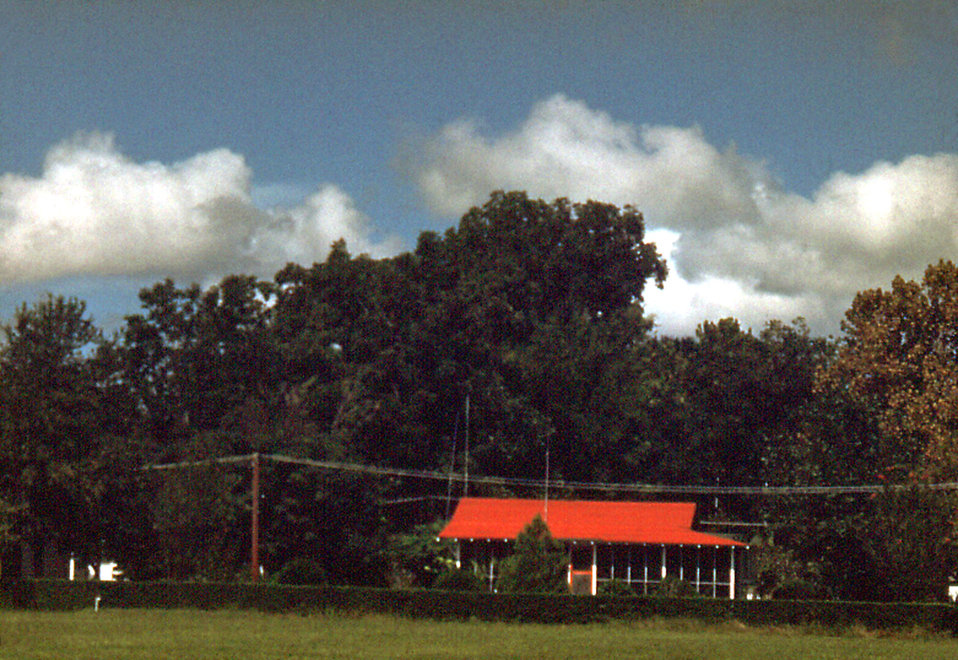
Depicted in this historic image, was a cottage that was used as a dwelling for a married couple. There were twenty-four such cottages located on the Carville, Louisiana Leprosarium colony's acreage. The hospital was a self-contained compound with its own power plant, storehouse, patient treatment centers, which included a dental office, food-processing facilities, i.e., a cafeteria, and its own cemetery.Because of the sequestration of the leprosarium's patients, sometimes for many years, those that were married were provided such dwelling places in order to maintain some semblance of a normal married life style.